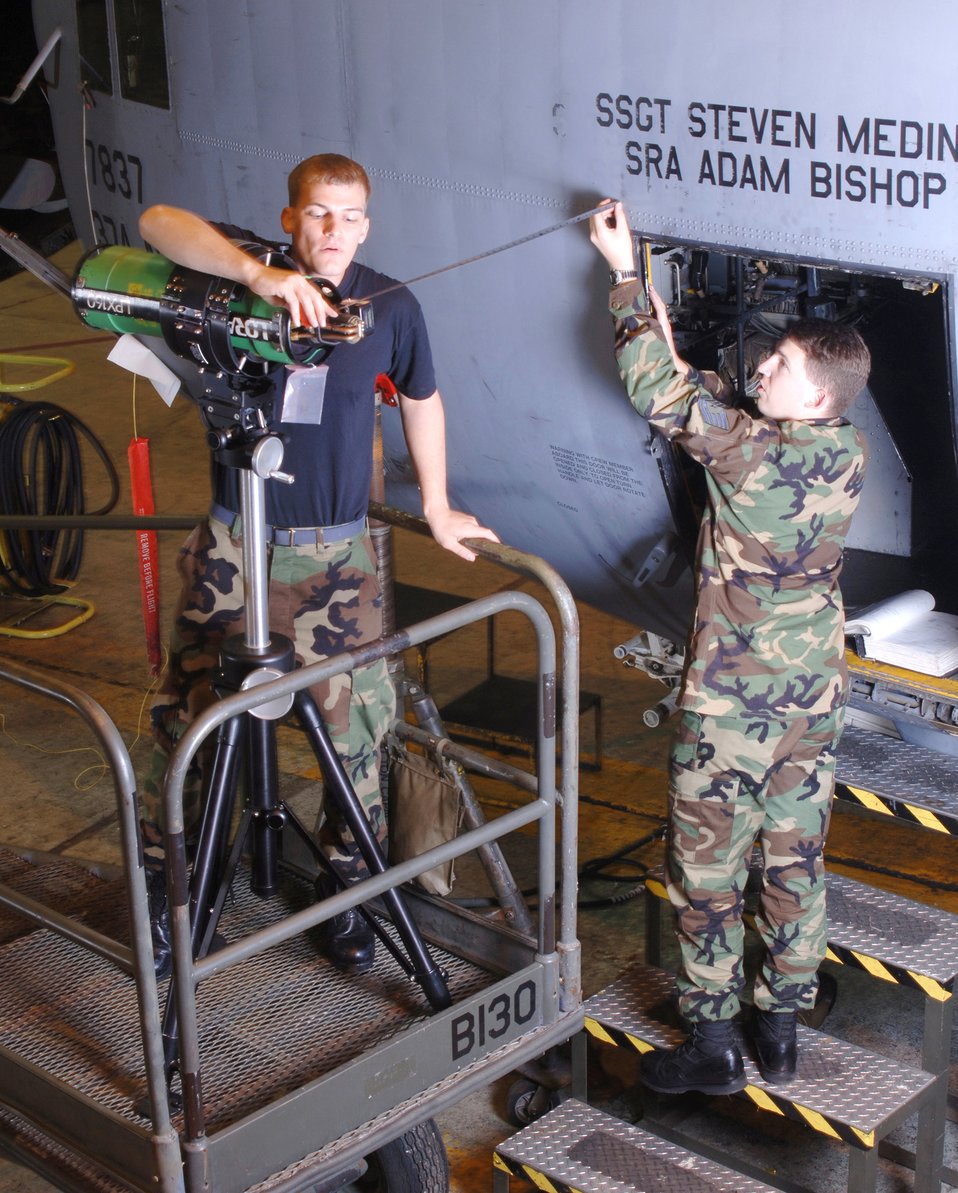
X-ray eyes

YOKOTA AIR BASE, Japan -- Tech. Sgt. Neil Wilke (right) and Senior Airman Jonathan Keller measure the distance between their Lorad portable X-ray equipment and the crew door of a C-130 Hercules aircraft inside a hangar here. The Airmen are checking the door frame for structural cracks. The nondestructive inspection technicians assigned to the 374th Maintenance Squadron here use the X-ray and advanced technology to examine the uniformity, quality and serviceability of components of assigned and in-transit aircraft.